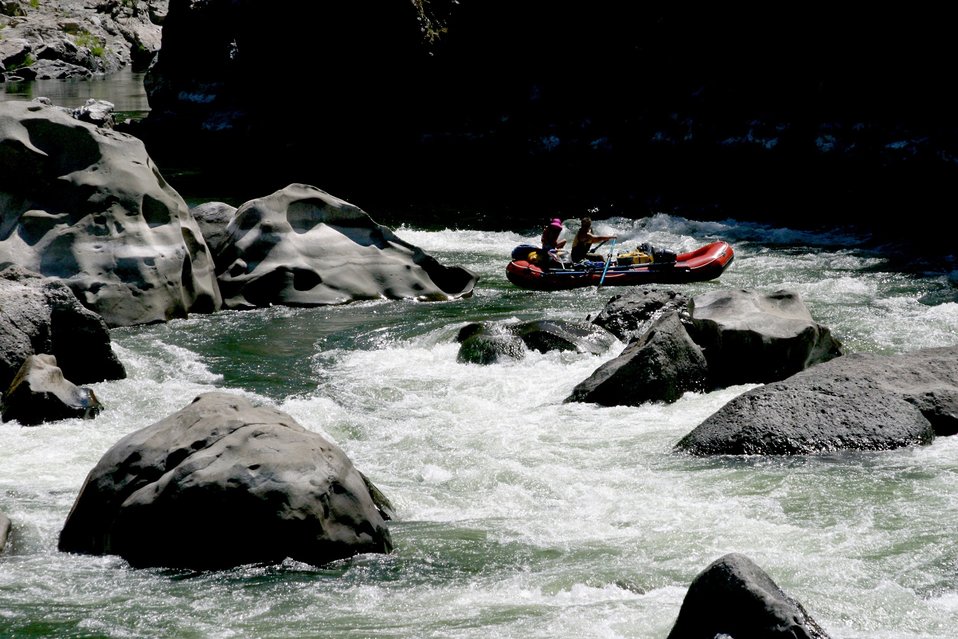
Boaters negotiate Blossom Rapids.